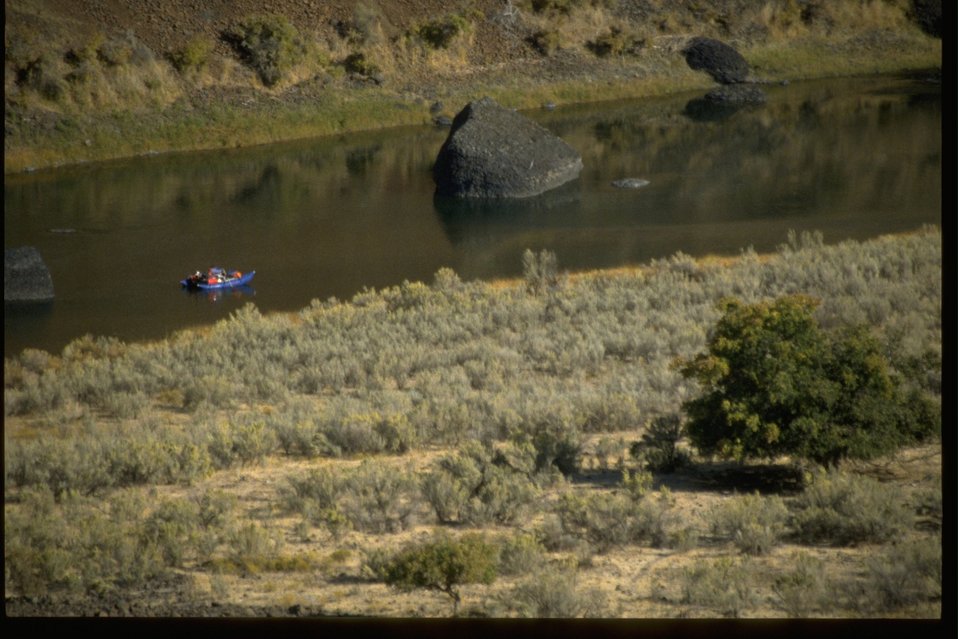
Photo in a seven series collection of a rafter on the John Day River. Approaching a large rock island with a heron perched.